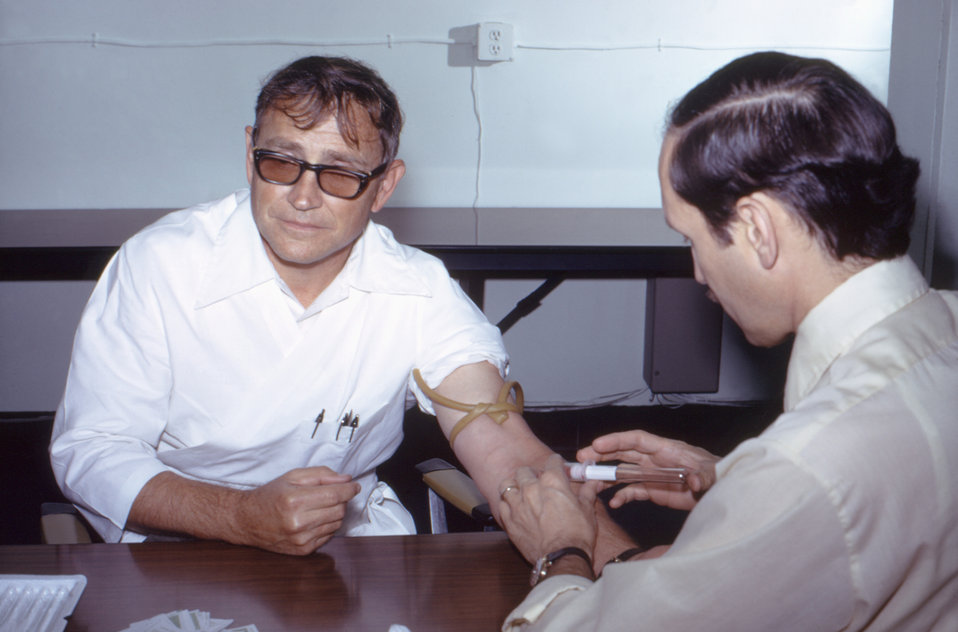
In this 1976 photograph, Dr. Gary Noble was drawing blood to be tested for its antibody concentrations.